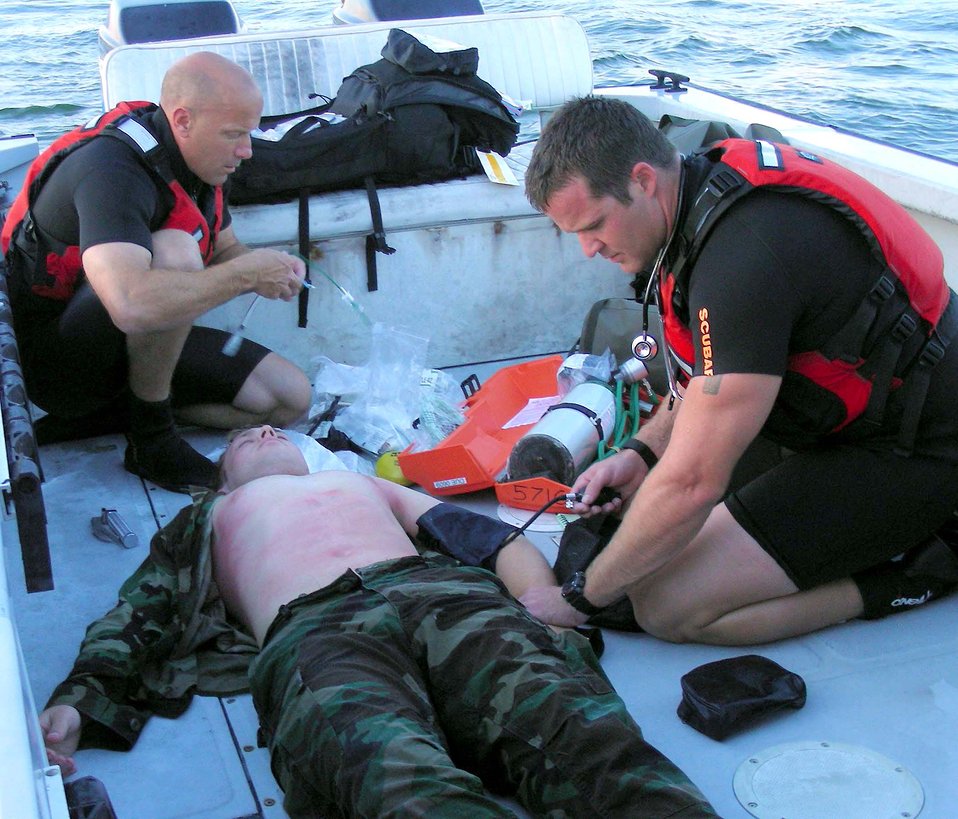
Pararescuemen train for space shuttle launch recovery

Staff Sgt. Russell Drake and Master Sgt. James Johnston simulate administering medical care to Senior Airman Andy Holzem aboard a Zodiac boat on the Banana River near Patrick Air Force Base, Fla., on Friday, June 23. The three Airmen, assigned to the 920th Rescue Wing, were training in open water rescue and recovery techniques to prepare them for space shuttle launch recovery support.